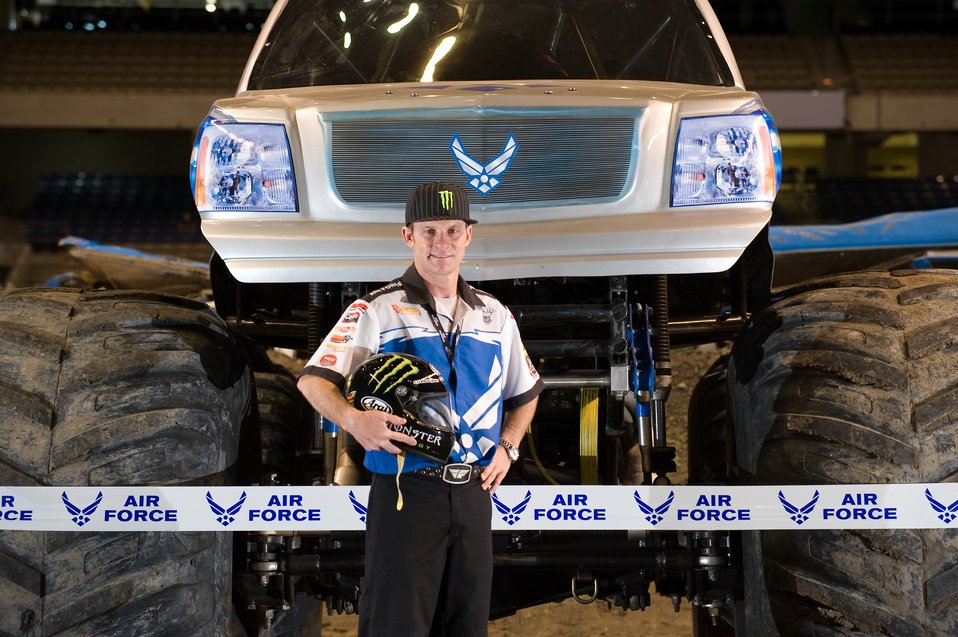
AF flies high at Monster Jam

Air Force monster truck driver Damon Bradshaw stands in front of Afterburner monster truck Jan. 11 prior to the start of the 2009 Monster Jam at the Alamodome in San Antonio. Mr. Bradshaw took second during the competition with fast lap times and freestyle performances that had the crowd of approximately 45,000 up and cheering. Afterburner's 540 cubic-inch Merlin supercharged racing V-8 engine churns out 1,425 horsepower. Mr. Bradshaw, in his 3rd season, demonstrated that he had mastered the application of power by launching the 10,000-lb vehicle more than 40 feet in the air, thrilling the crowd. Afterburner is equipped with 66